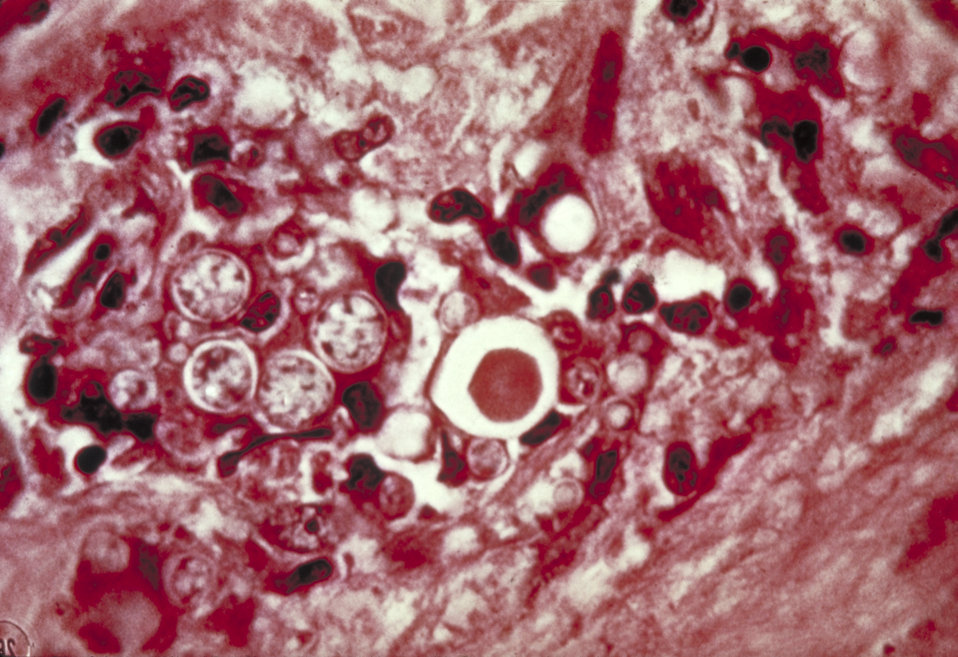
Histopathology of paracoccidioidomycosis.